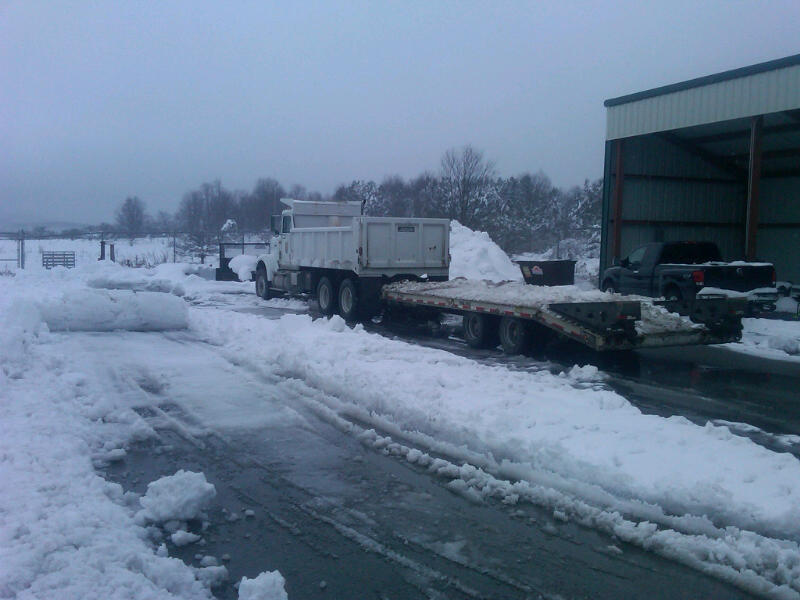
Hurricane Sandy snows at Canaan Valley National Wildlife Refuge (WV)

Hurricane Sandy dumped over two feet of snow at Canaan Valley National Wildlife Refuge. The refuge is assisting Tucker County with snow removal.